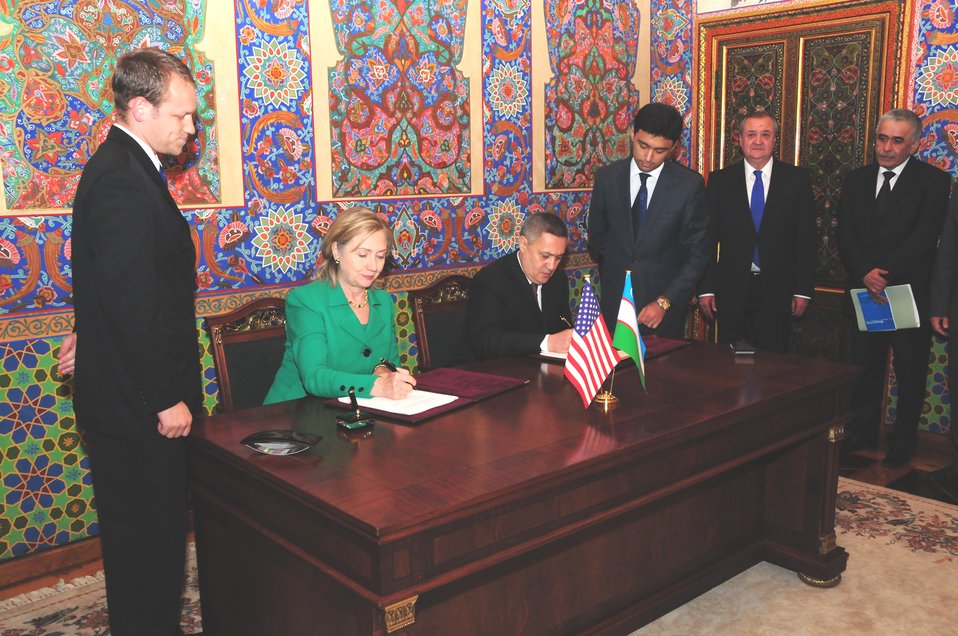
Secretary Clinton and Uzbek First Deputy Prime Minister Azimov Sign the SandT Cooperation Agreement

U.S. Secretary of State Hillary Rodham Clinton and Uzbekistan First Deputy Prime Minister Rustam Azimov sign the Science and Technology Cooperation Agreement in Tashkent, Uzbekistan, on December 2, 2010.